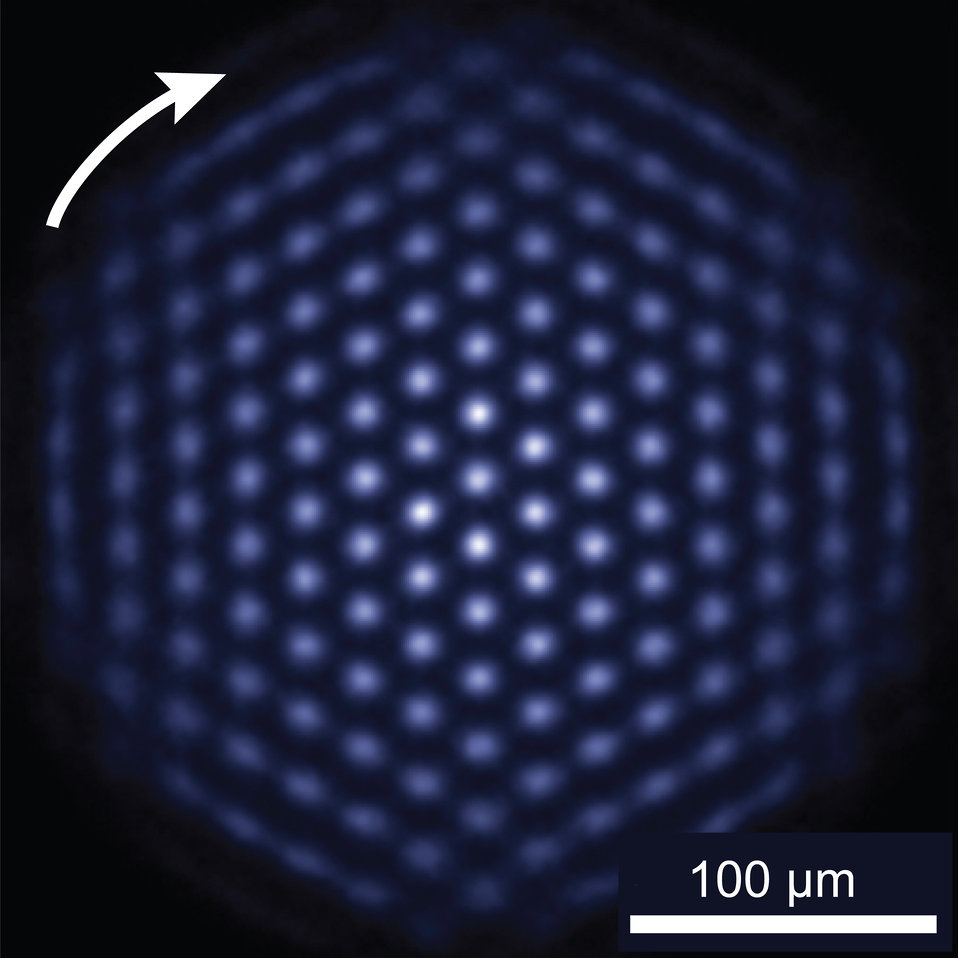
Quantum Simulator Crystal

The NIST quantum simulator permits study of quantum systems that are difficult to study in the laboratory and impossible to model with a supercomputer. In this photograph of the crystal, the ions are fluorescing, indicating the qubits are all in the same state. Under the right experimental conditions, the ion crystal spontaneously forms this nearly perfect triangular lattice structure.